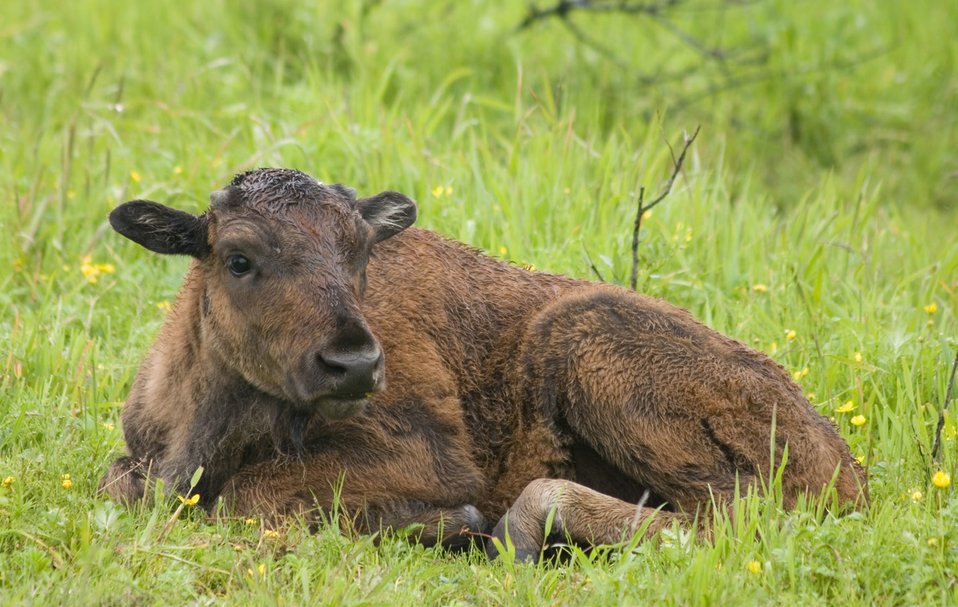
Wood Bison Calf

During the early 1800s, wood bison numbers were estimated at 168,000, but by the late 1800s, the subspecies was nearly eliminated.
Excessive hunting was the primary factor leading to population decline. Another factor that is thought to have played a role in the decline in wood bison in Canada is a gradual loss of meadow habitat through forest encroachment. Although not quantified, it is likely that because of fire suppression, and subsequent forest encroachment on meadows, there was a loss of suitable open meadow habitat for wood bison throughout their range through about 1990.